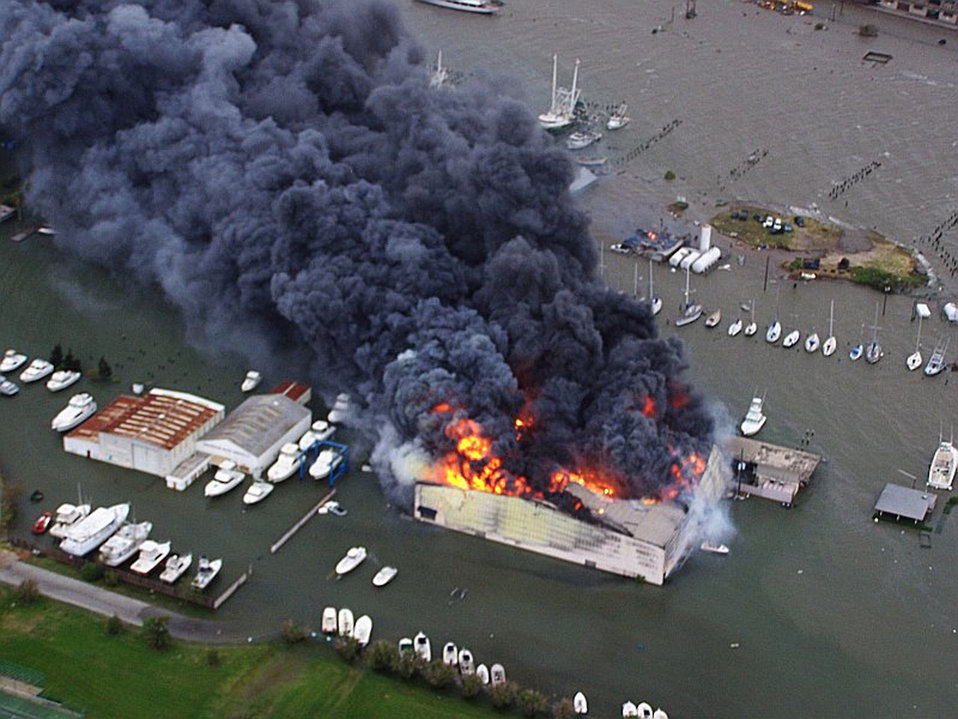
JTF-129 Airmen rescue civilians stranded in Galveston

Joint Task Force-129 crew, Jolly 92, flies over a yacht warehouse fire in Galveston, Texas, Sept. 12. The California Air National Guard crew of Jolly 92 rescued six civilians and pets stranded in Galveston.